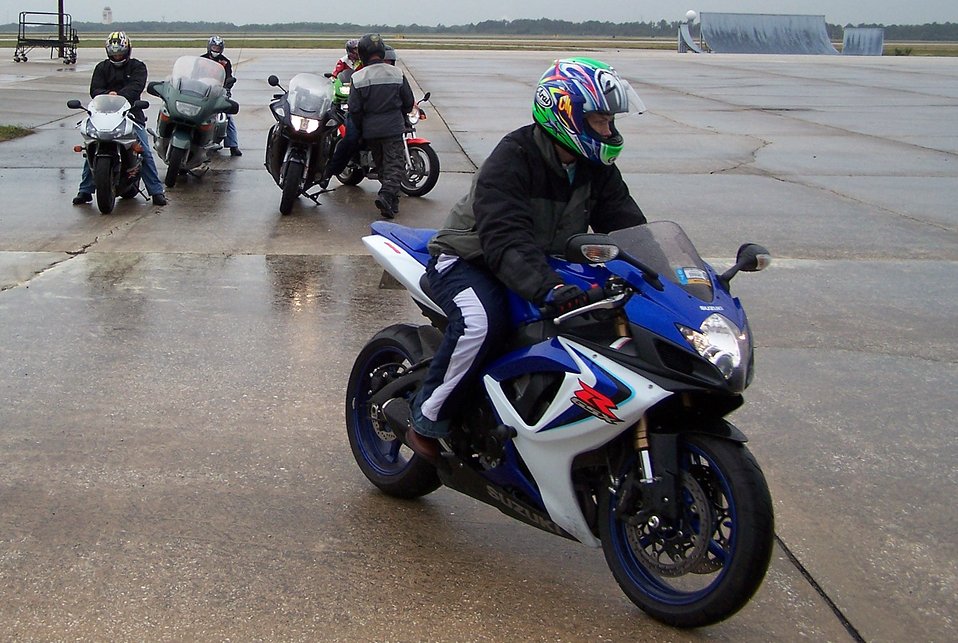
MacDill riders star in motorcycle safety DVD

Airmen ride their motocycles while a video crew shoot footage for a new motorcycle safety DVD Jan. 24 at MacDill Air Force Base, Fla. The video will be a part of a safety DVD used by the military and is set to release in the spring.